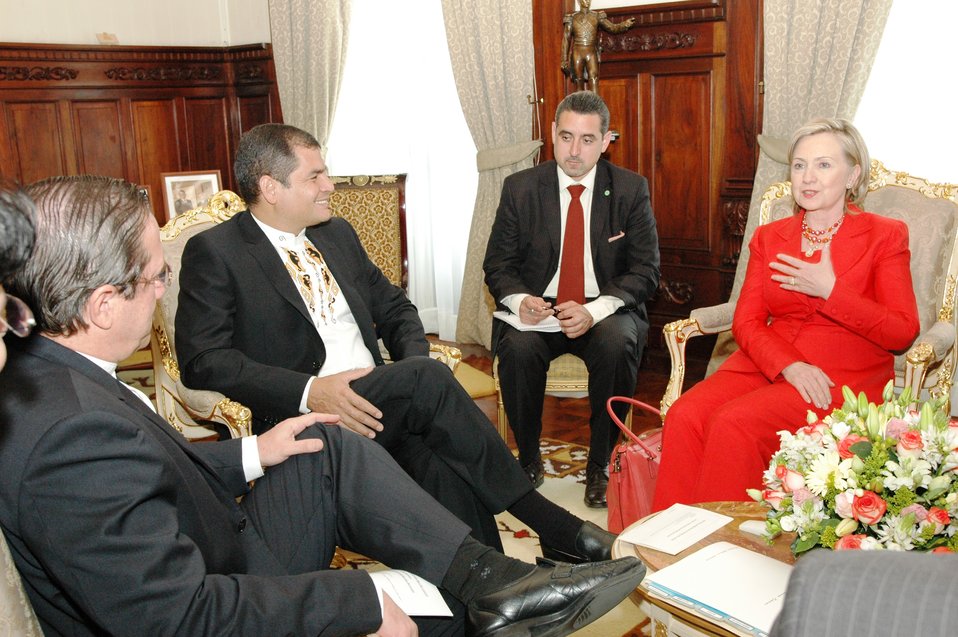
Ecuadorian President Rafael Correa Holds Bilateral Meeting With Secretary Clinton

Ecuadorian President Rafael Correa holds a bilateral meeting with U.S. Secretary of State Hillary Rodham Clinton during their bilateral meeting in Quito, Ecuador, on June 8, 2010.